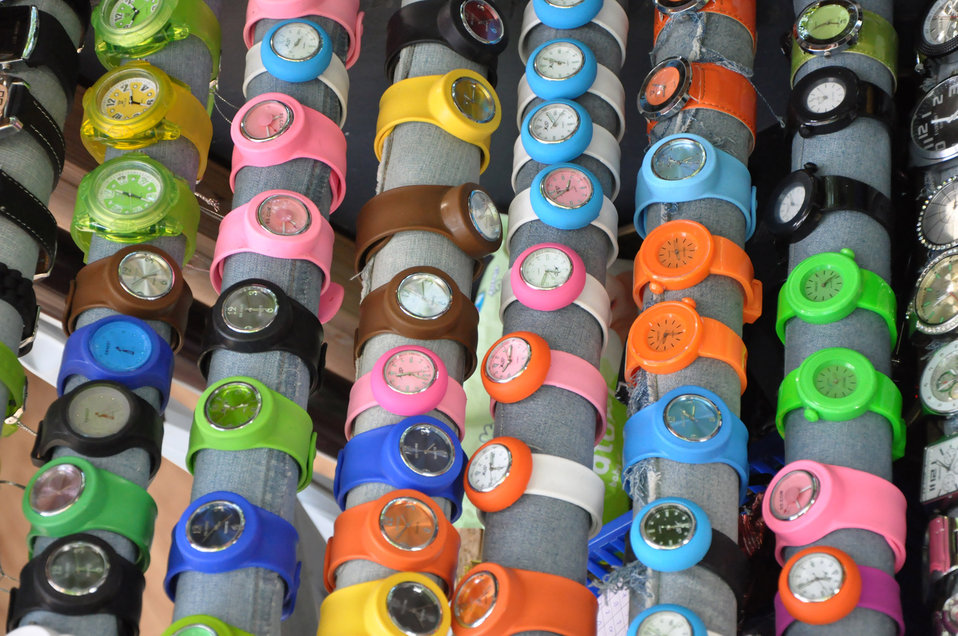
Watches texture

Wrist watch texture.